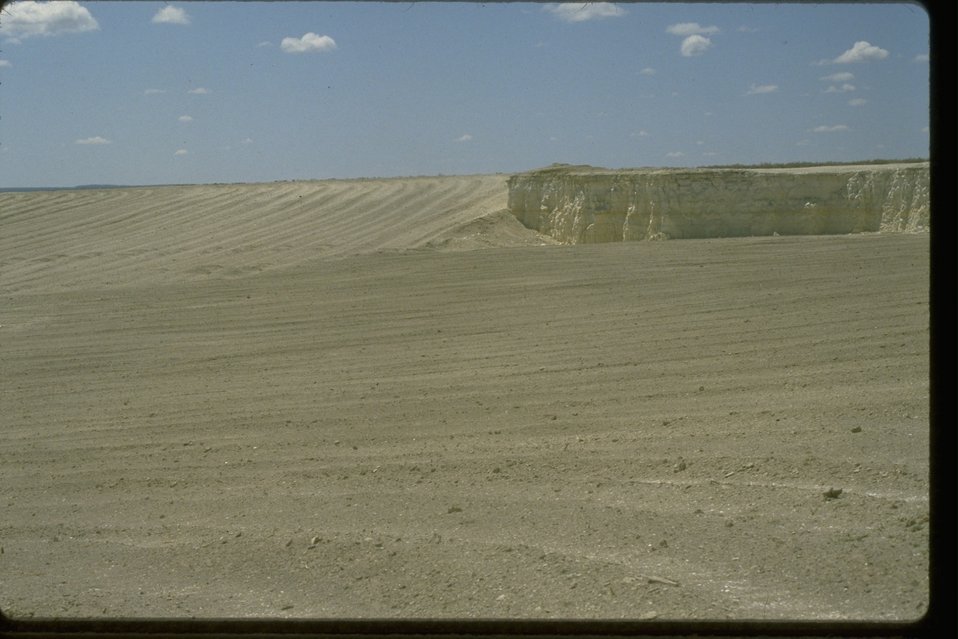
Diatomite Reclamation in progress.